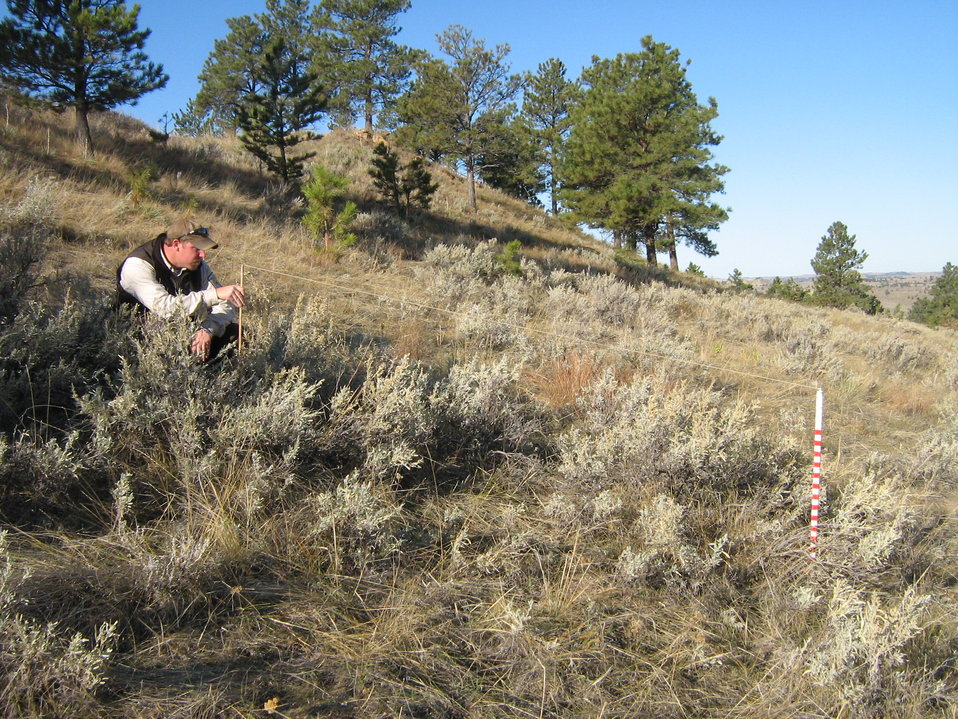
Vegetation Monitoring

Charles M. Russell NWR staff use a Robel pole to monitor upland vegetation cover. Plant cover is important for ground nesting birds like sage-grouse.